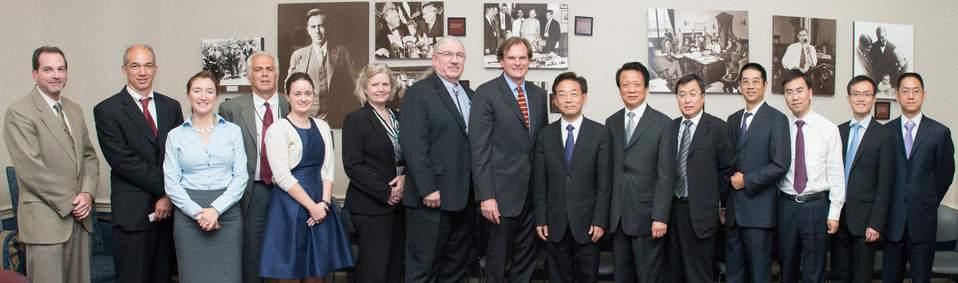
The People’s Republic of China Ministry of Agriculture (MOA) Vice Minister H.E. Zhang Taolin, center right, leader of the Chinese Agricultural Delegation and the U.S. Department of Agriculture (USDA) Under Secretary for Natural Resources and Environment (NRE) Robert Bonnie, center left, and other USDA leaders at the USDA headquarters Whitten Building, in Washington, D.C., on Friday June 13, 2014. Pictured here from left to right, are USDA Natural Resources Conservation Service (NRCS) Science and Technology Deputy Chief C. Wayne Honeycutt, Ph.D., Office of the Chief Economist (OCE) Climate Change Program Director William Hohenstein, Forest Service (USFS) and International Programs Asia Program Specialist Darcy Nelson, NRCS Farm Bill Programs Assistant State Conservationist Gerald L. Roach, Foreign Agricultural Service (FAS) Office of Country And Regional Affairs (OCRA) China and Hong Kong Desk Officer Lauren McGraw, FAS Associate Administrator Suzanne Palmieri, Natural Resources and Environment (NRE) Deputy Under Secretary Butch Blazer, Under Secretary Robert Bonnie, The People’s Republic of China Ministry of Agriculture (MOA) Vice Minister H.E. Zhang Taolin, MOA Department of Finance Director-General Li Jianhua, Department of International Cooperation Deputy Director-General Xie Jianmin and Wei Zhenglin, General Office Section Chief Jiang Yekui, Department of International Cooperation Program Officer Jin Taicheng, and Center of International Cooperation Service Interpreter Wan Ye.